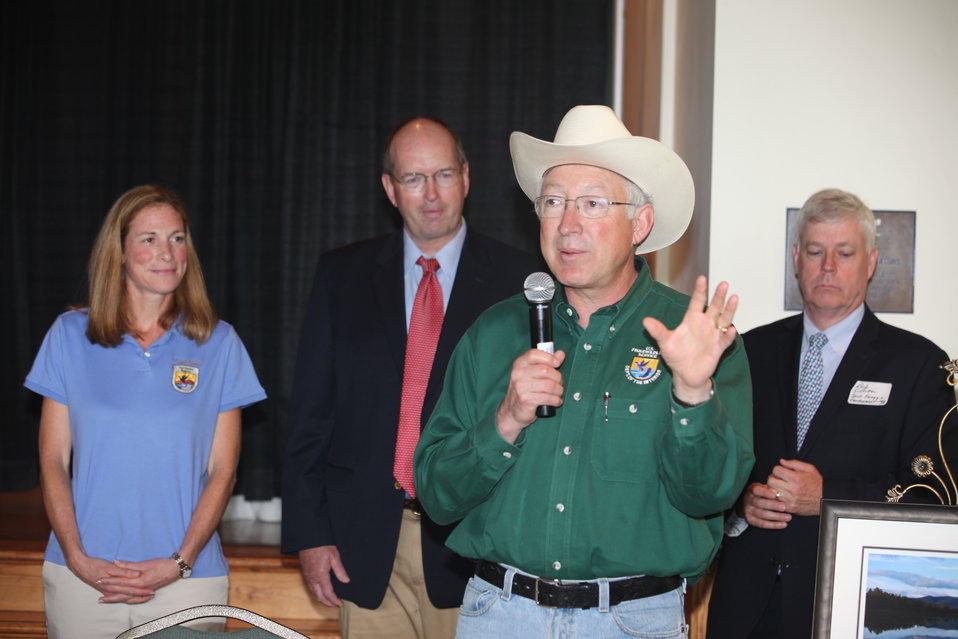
Ken Salazar & Wendi Weber

Secretary of the Interior Ken Salazar speaks with Connecticut River stakeholders in Hartford, Conn. Northeast Regional Director Wendi Weber and National Wildlife Refuge Volunteer of the year in background.